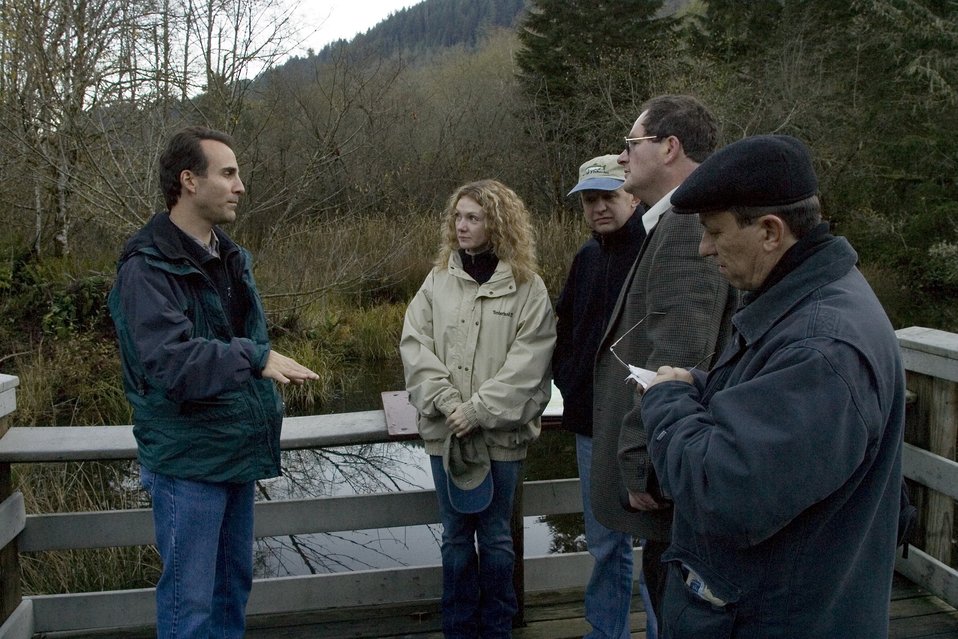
Forest Service’s Dan Shively explains the role the Wetland Boardwalk Trail plays in environmental education as a Russian interpreter translates to to Alexander Chistyakov, Vice-Governor of Kamchatka, Oksana Rudenko Kamchatka Regional Administrator and others in the Wild Salmon Center.